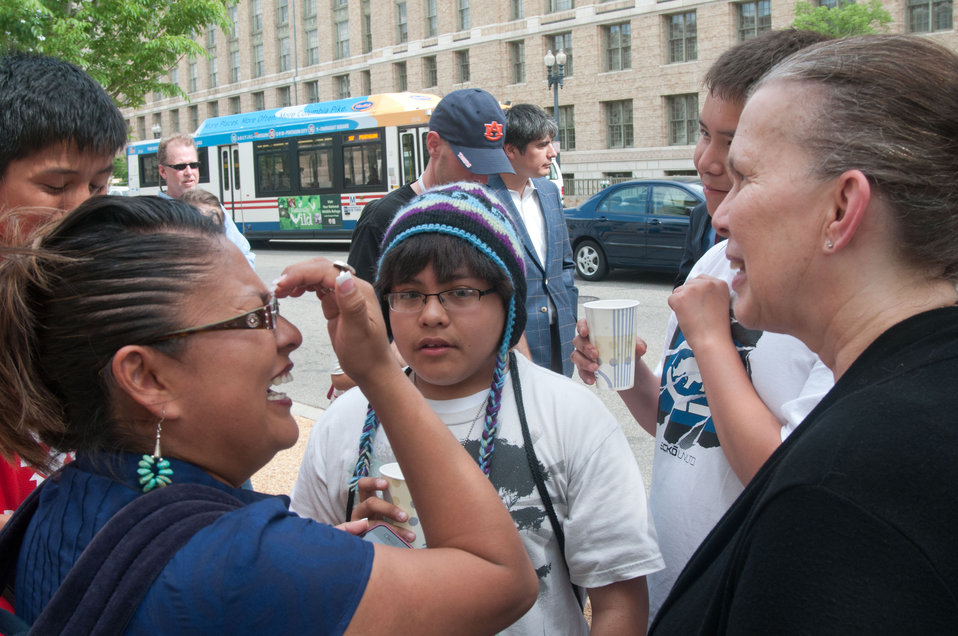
Senior Advisor to Secretary Vilsack with the USDA Office of Tribal Relations Janie Hipp, spent talks with Students from Eastern and Western Tribes, Southeast Alaska, and Tuba City, Arizona came to the Nation’s Capitol to plant vegetable seeds that are indigenous to North America. The garden is part of the Headquarters’ People’s Garden. The event took place in Washington, DC, on Wednesday, April 27, 2011.